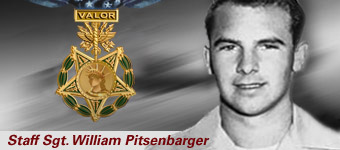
Staff Sgt. William H. Pitsenbarger, Medal of Honor recepient.